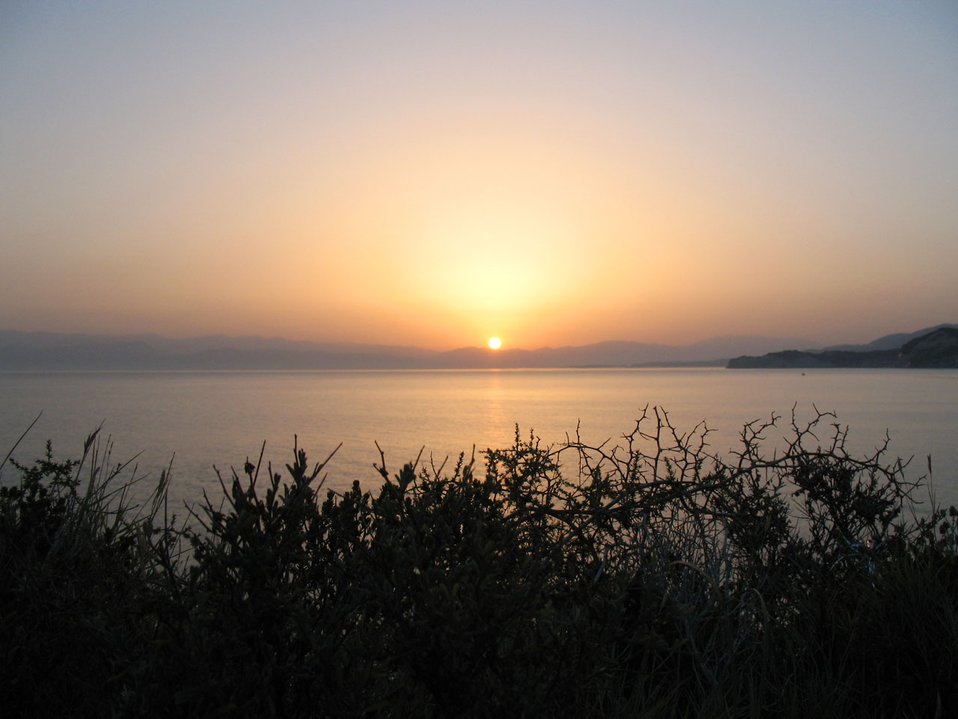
Sunrise on corfu island in greece.